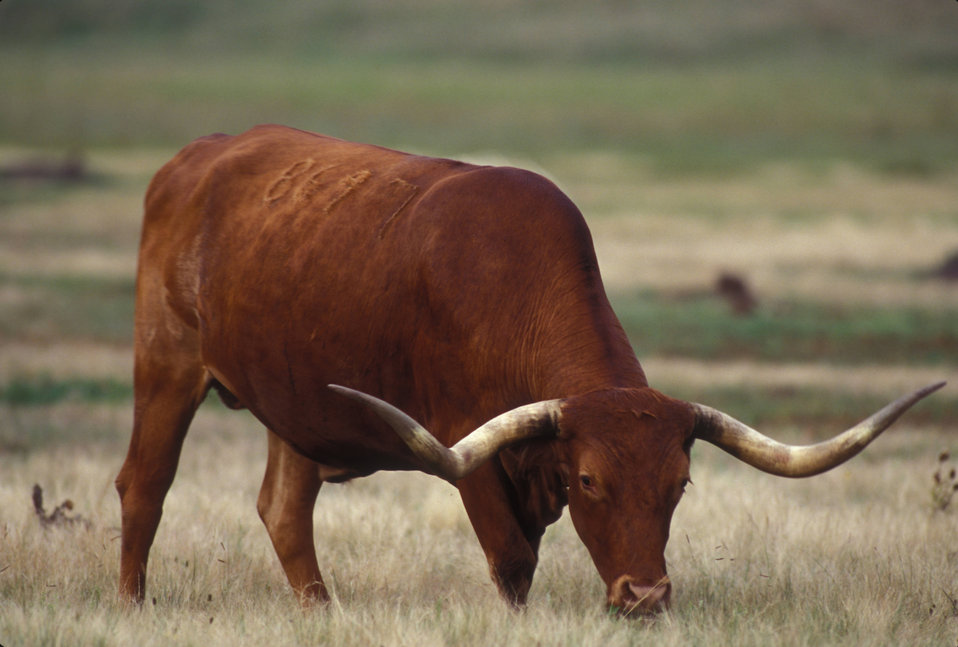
Texas Longhorn grazing

Photo credit: USFWS/John and Karen Hollingsworth

Changes in temperature and snow pack can limit the forage available for grazing wildlife, as well as the livestock carrying capacity on working lands